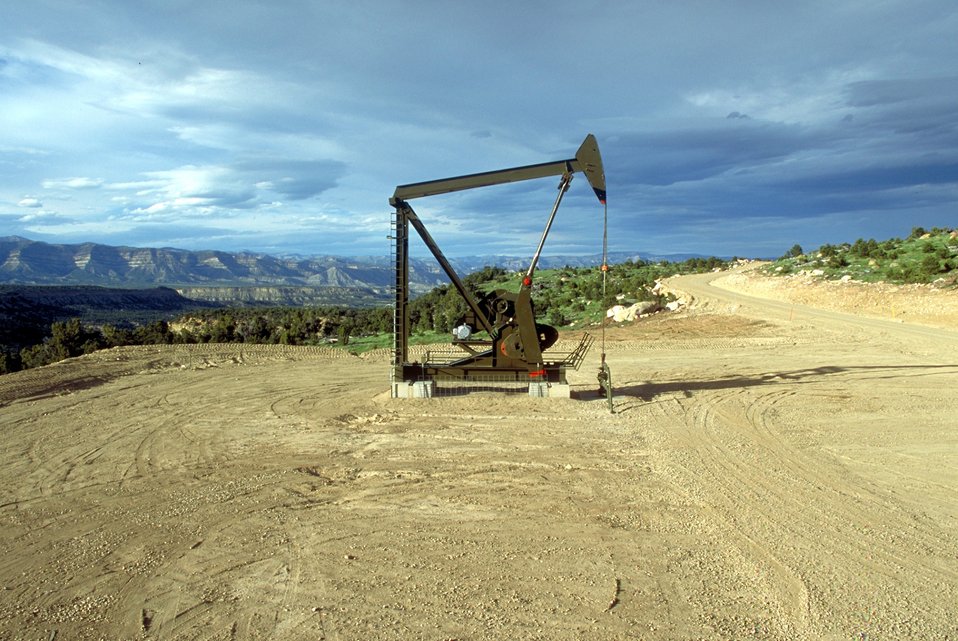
Pump unit producing coal bed methane near Price, Utah.